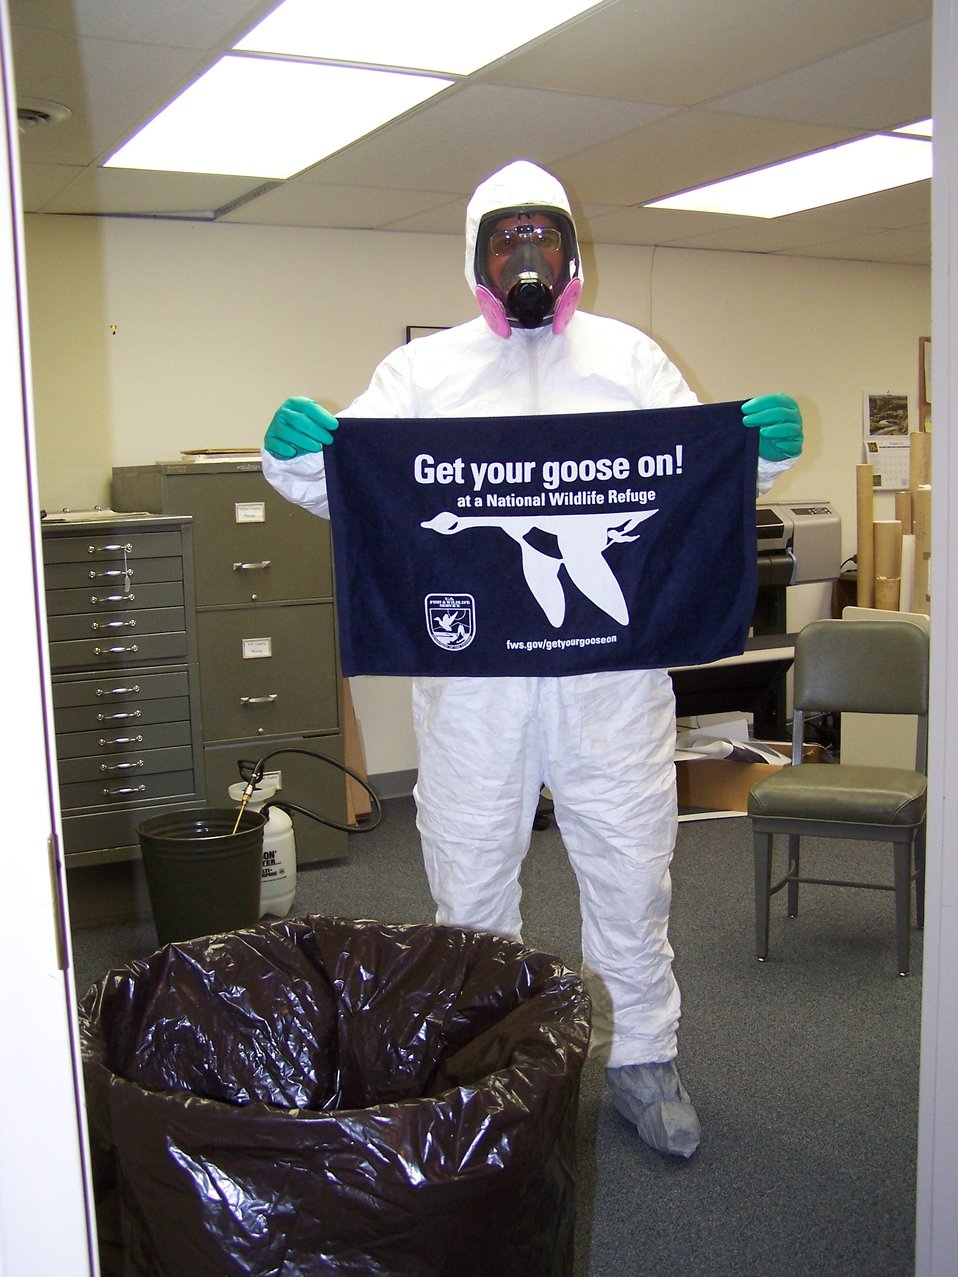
Get Your Goose On! - Hazmat Style

Maintenance worker, Nick Hopkins, suits up in precaution of Hanta Virus, to clean up mouse droppings.